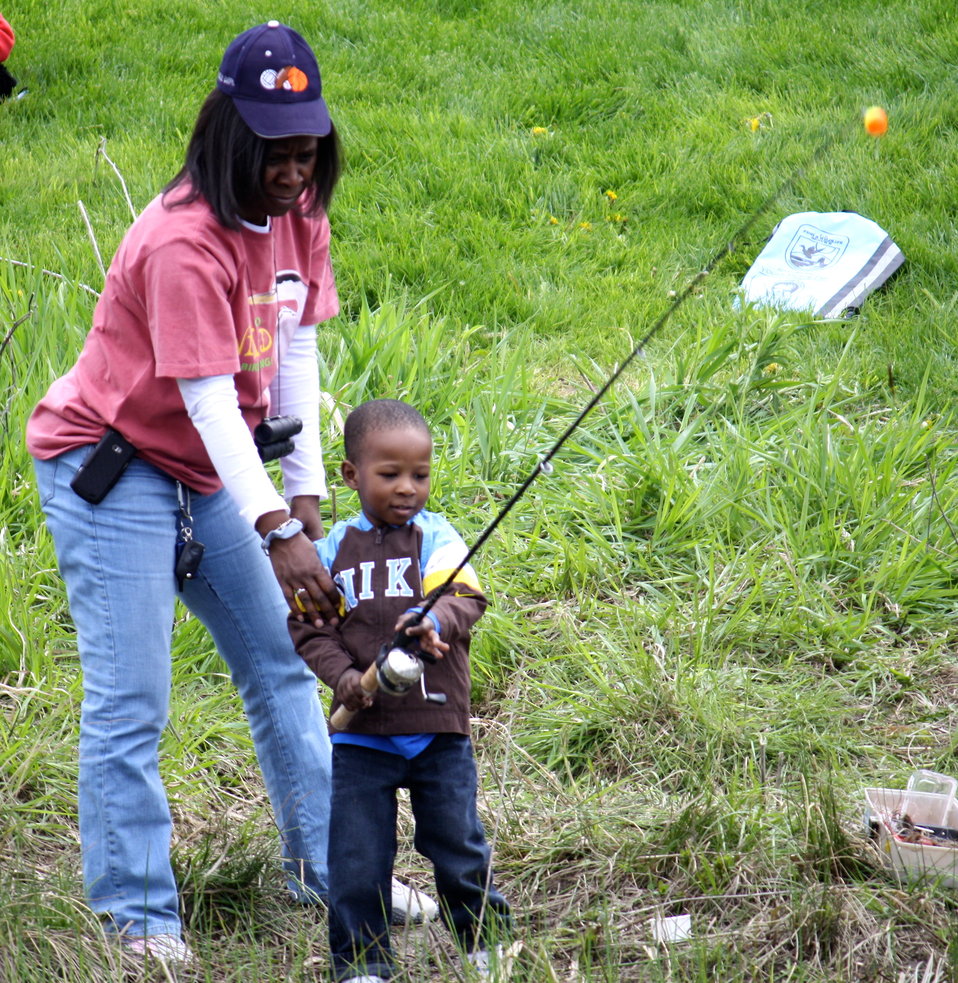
Mother and son fishing

Fishing at the Fishing Derby held at the USFWS regional office in Hadley, MA on May 7, 2011.